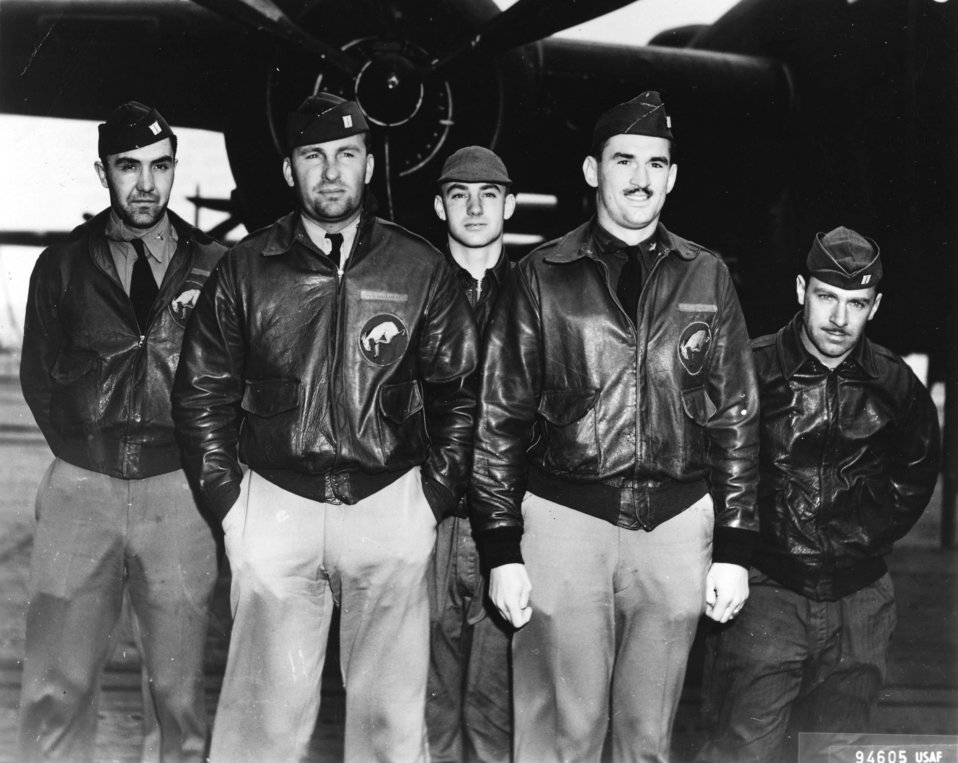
Army captain remembers service, sacrifice of his family's 'Raider'

First Lt. Dean E. Hallmark stands with his aircrew mates of Crew No. 6 before the famed Doolittle Raid mission April 18, 1942. Crew No. 6 with the 95th Bombardment Squadron flew Plane #40-2298 to bomb targets in Tokyo. Front row: Lieutenant Hallmark, pilot; Lt. Robert J. Meder, copilot; back row: Lt. Chase J. Nielsen, navigator; Sgt. William J. Dieter, bombardier; and Sgt. Donald E. Fitzmaurice, flight engineer/gunner.